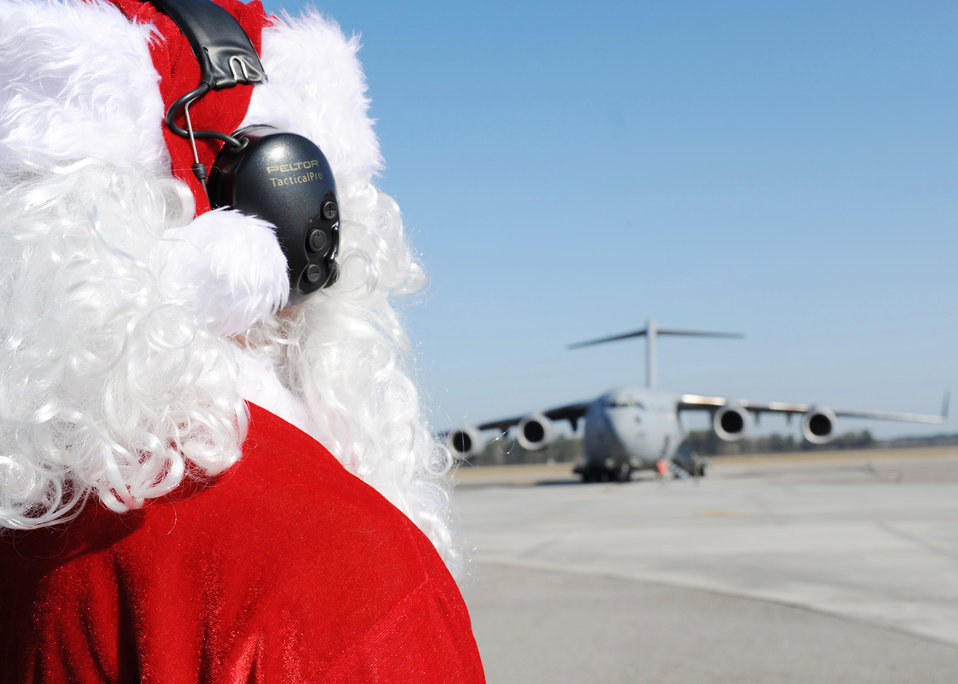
Santa Claus, friends welcome C-17

A C-17 Globemaster III approaches Santa Claus, known as Maj. Aaron Sasson, on the flightline at Charleston Air Force Base, S.C., Dec. 22, 2009. For a squadron fundraiser, the 437th Aircraft Maintenance Squadron voted for Major Sasson to become Santa. He is the 437 AMXS operations officer.